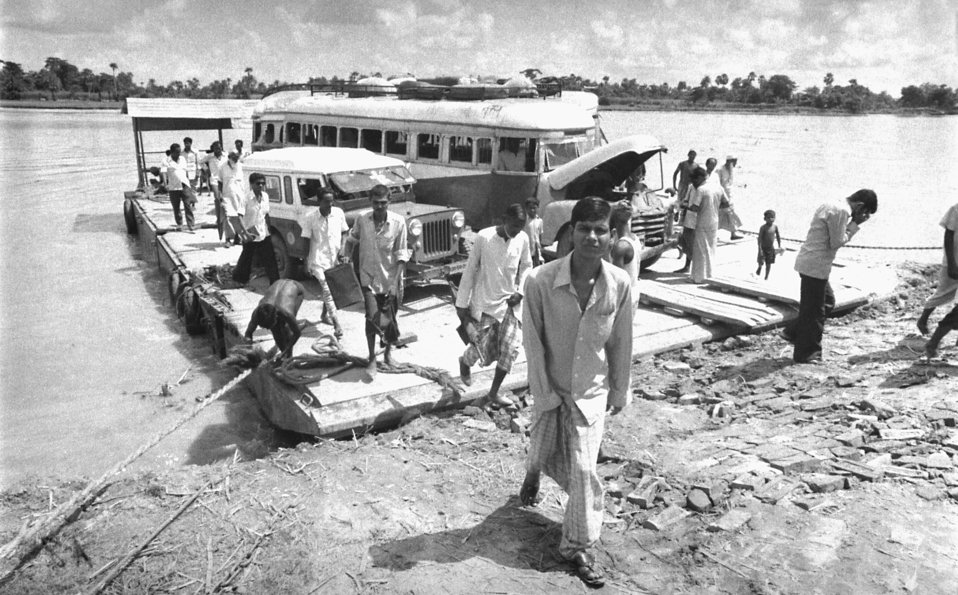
This photograph was captured by Pierre Claquin, M.D., B.A.C., who at the time was a member of the World Health Organization's Smallpox Eradication Program. It was provided by former E.I.S. officer, Stanley O. Foster M.D., M.P.H., was one of a series entitled 'The Story of One Smallpox Jeep', which depicted the travails faced by the jeep, and its occupants of public health practitioners, as they road through the Bangladesh countryside in an attempt to eradicate smallpox from the country. This Mahendra Jeep was being ferried across a river in order to continue its rural countryside journey educating residents about smallpox, its signs and symptoms. At the time of Smallpox Eradication, 72-76 ferries were used to cross the rivers. This was the Daukandi ferry, which traveled from Dhaka to Comilla, a route now traversed by a bridge. Travel which used to take 12-24 hours, now can be done in 2-3 hours by bridge, many which were blown up during the country's 1971 war with India.